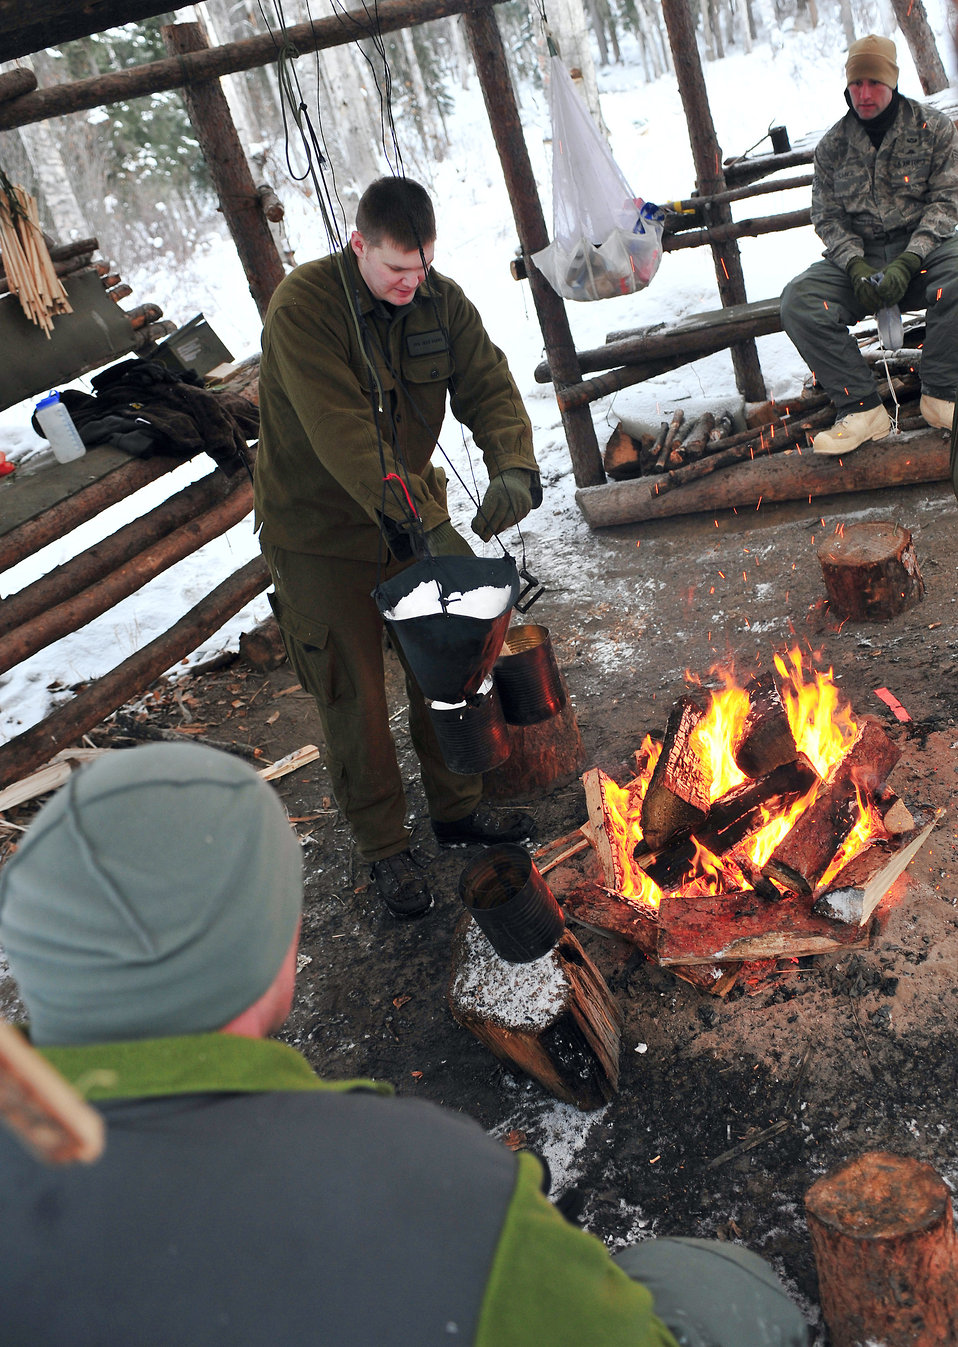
Learning survival skills in 'Cool School'

Senior Airman Jess Evans demontrates a water machine to a class attending Arctic Survival School Feb. 25 at Eielson Air Force Base, Alaska. A water machine is created by melting snow in a sea anchor of other improvized device and then water is collected in a container. Airman Evans is an Arctic Survival School instructor.